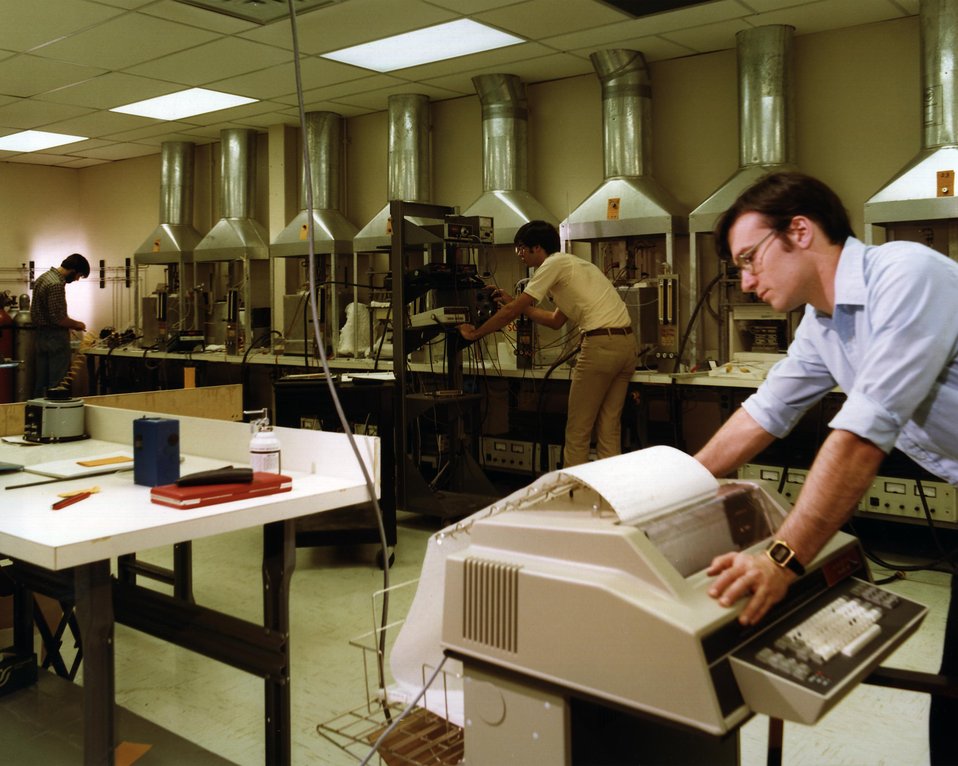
MOLTEN CARBONATE FUEL CELL TESTING FACILITY SHOWING 8 OPERATIONAL TEST STANDS AND COMPUTER TERMINAL.

A NEWER METHOD OF COMMERCIALLY GENERATING ELECTRICITY IS BEING DEVELOPED BY GENERAL ELECTRIC. FUEL CELLS, BATTERY-LIKE GENERATORS, PRODUCE ELECTRICITY BY AN ELECTROCHEMICAL REACTION. UNLIKE THE BATTERY, THE FUEL CELL HAS A CONSTANT SOURCE OF FUEL. IN THIS PROGRAM, G.E. IS PLANNING TO USE GASIFIED COAL TO POWER THE CELLS. THIS HYDROGEN-RICH FUEL IS FED INTO ONE SIDE OF THE CELL WHILE OXYGEN IS FED INTO THE OTHER. THIS CREATES A NEGATIVE CHARGE AT THE HYDROGEN (ANODE) SIDE AND A POSITIVE CHARGE AT THE OXYGEN (CATHODE) SIDE. THE ATTRACTION OF THESE CHARGES CAUSES THE ELECTRONS TO FLOW THROUGH THE MOLTEN CARBONATE ELECTROLYTE. THIS MOVEMENT OF THE ELECTRONS CREATES THE ELECTRICITY. BECAUSE THE MOLTEN CARBONATE FUEL CELL HAS A HIGH OPERATING TEMPERATURE, IT CREATES EXCESS HEAT WHICH CAN BE USED TO POWER OTHER ELECTRIC GENERATORS.